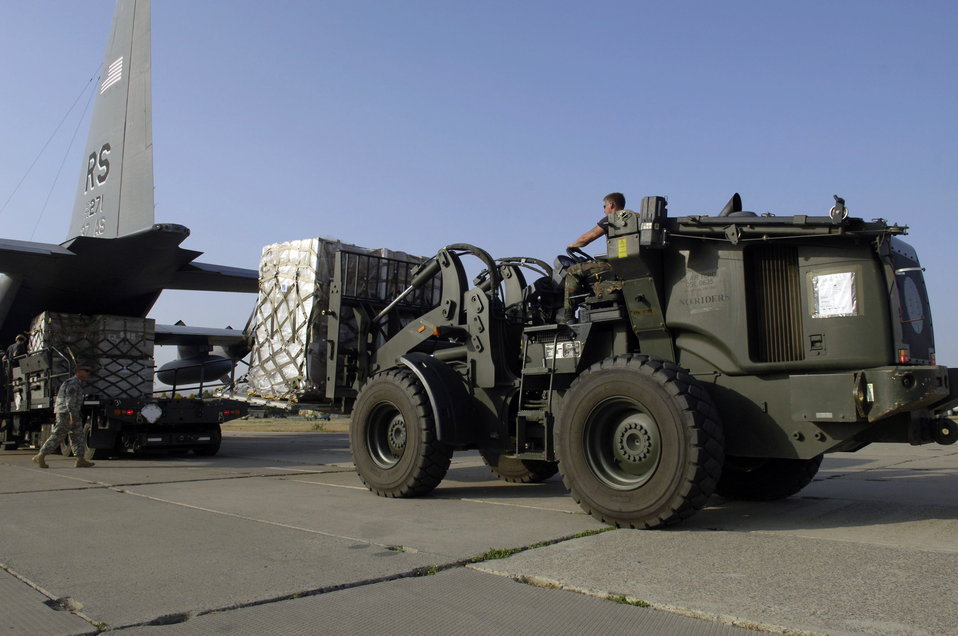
U.S. military delivers 2 million pounds of aid to Georgia

Airmen assigned to the 720th Air Expeditionary Squadron unload pallets of Meals, Ready to Eat, sleeping bags and cots Aug. 23 on a flightline in Tbilisi, Georgia. The joint humanitarian assistance assessment team with U.S. European Command is working with the federal government, international governments, aid agencies and the Republic of Georgia to assist Georgians affected by the recent conflicts.